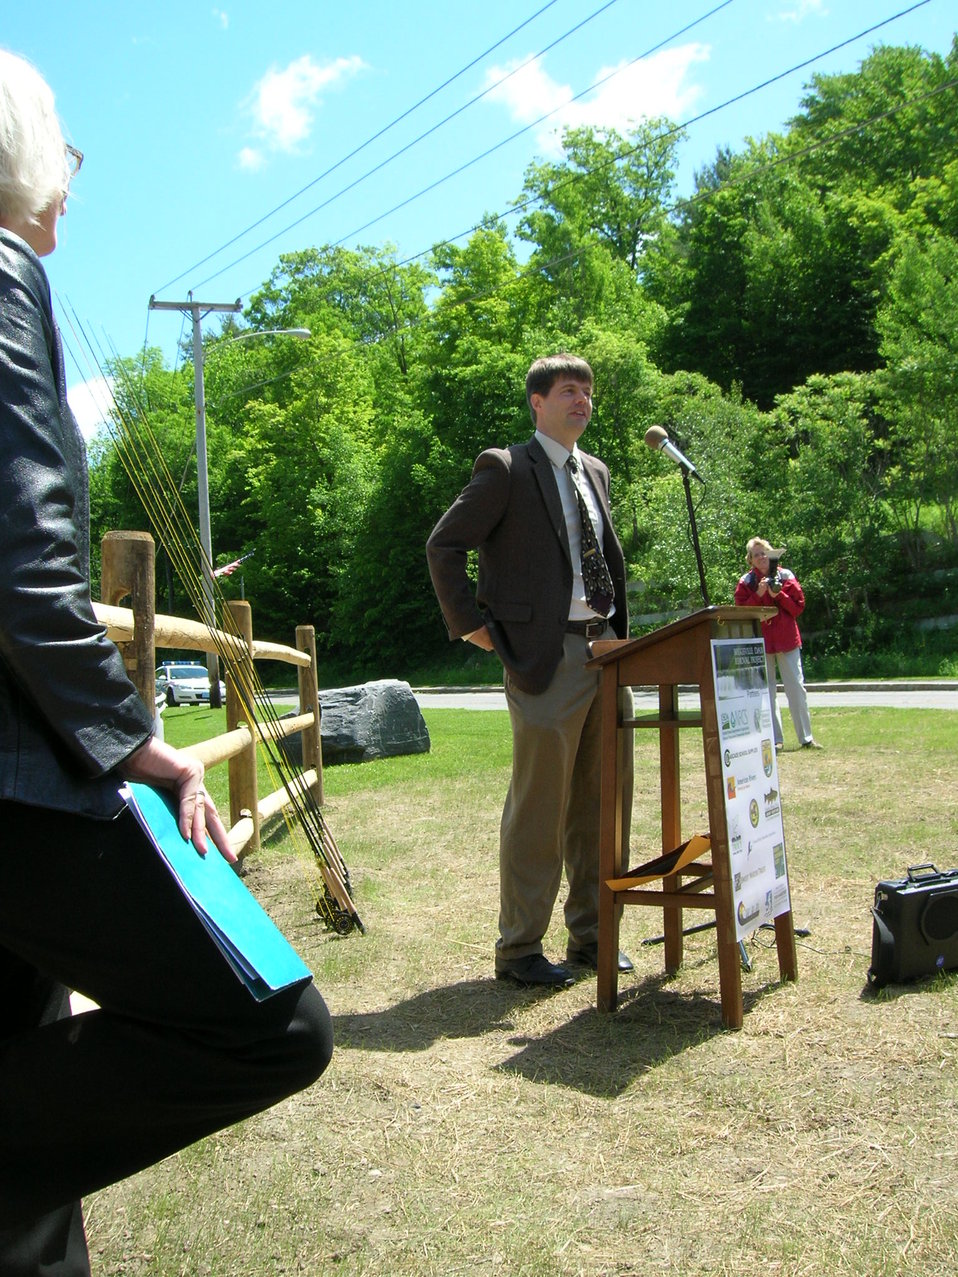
Briggsville Dam Removal Celebration